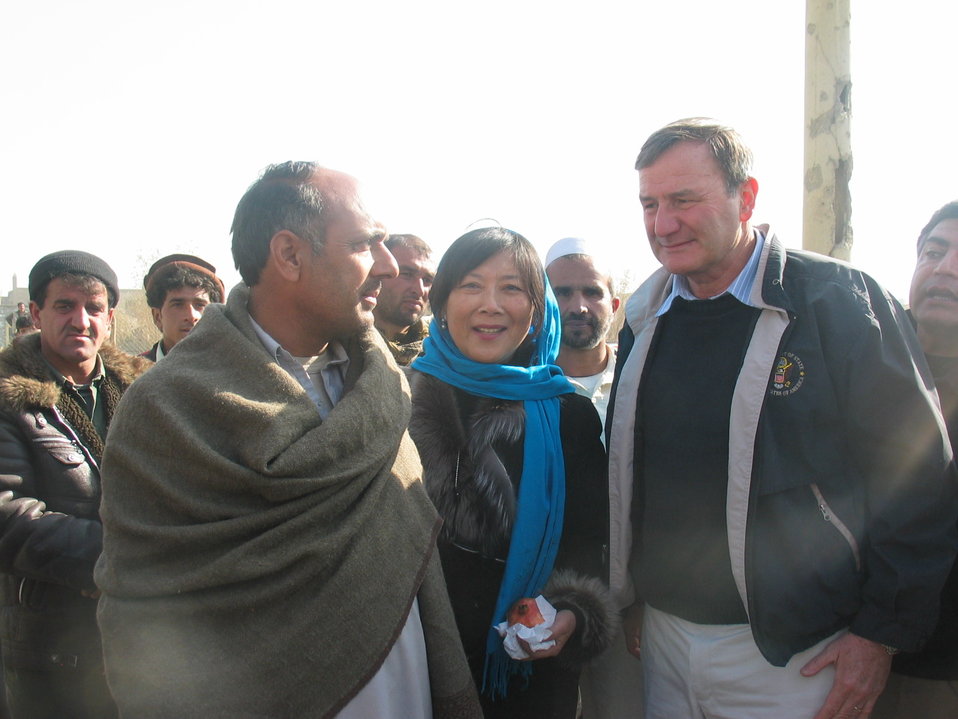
Kabul River Bridge Renovation, December 3, 2010